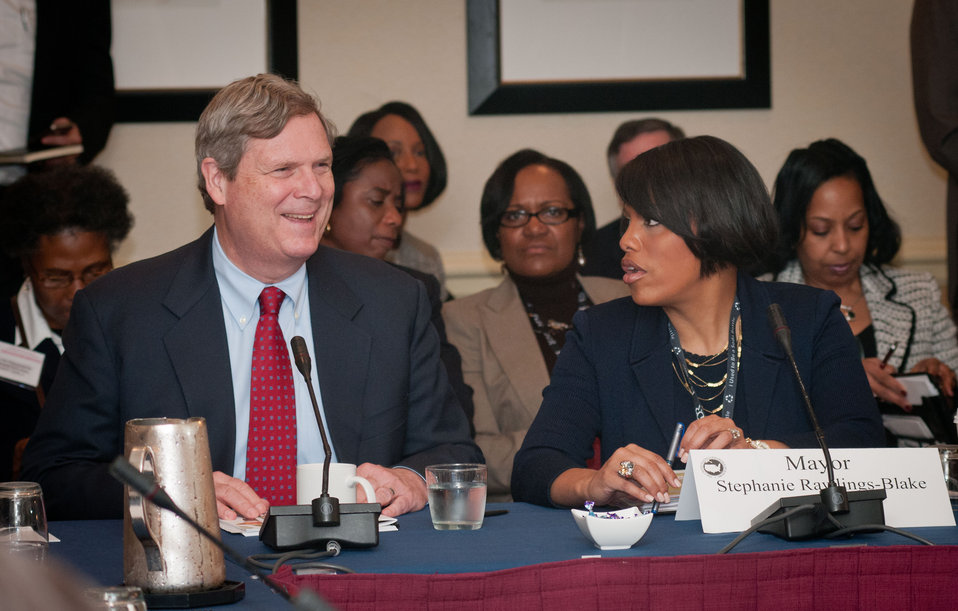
Agriculture Secretary Thomas Vilsack, left, enjoys a comment about sports teams from Mayor of Baltimore and Vice Chair U.S. Conference of Mayors Stephanie Rawlings-Blake, right, during her opening of the Food Policy session of the United States Conference of Mayors 81st Winter Meeting, in Washington D.C., on Thursday, Jan 17, 2013.